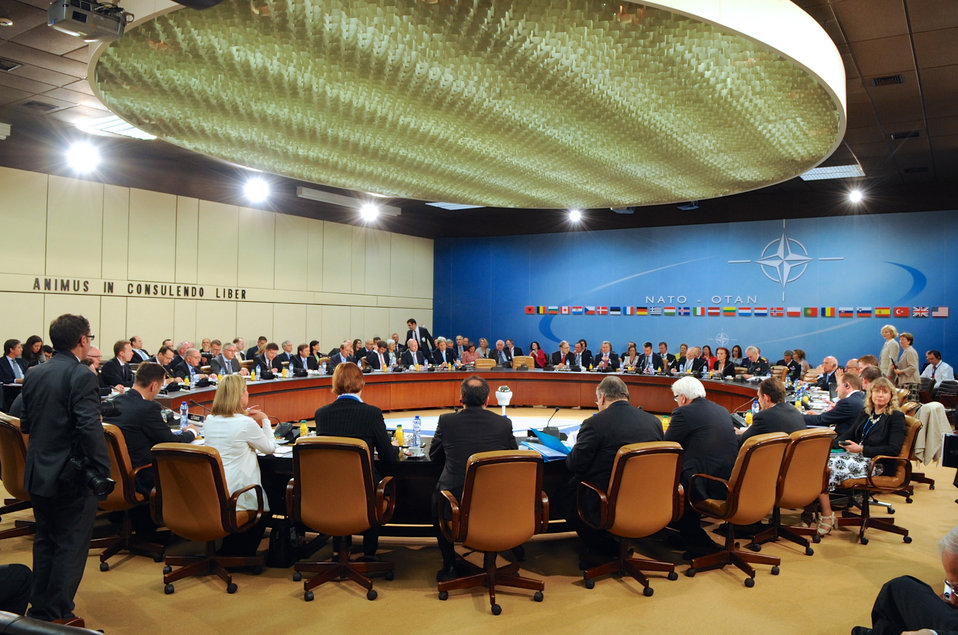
Secretary Kerry Joins NATO-Ukraine Commission Meeting In Brussels

U.S. Secretary of State John Kerry and his fellow foreign ministers participate in a NATO-Ukraine Commission Session at NATO Headquarters in Brussels, Belgium, on April 1, 2014.